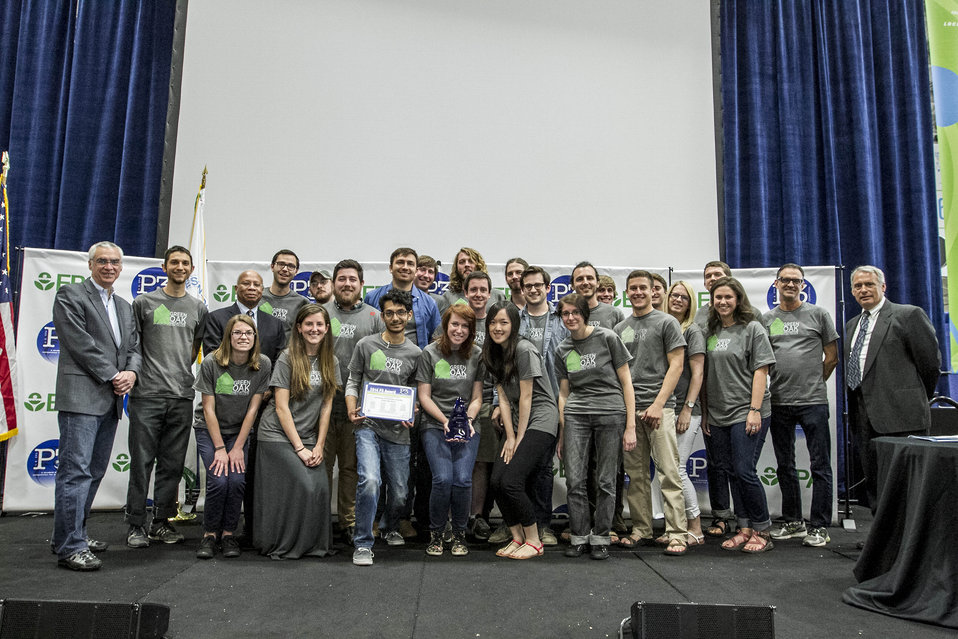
2014 P3 Competition

University of Tennessee-Knoxville’s team receives their EPA P3 Award.
UT-Knoxville’s EPA P3 website